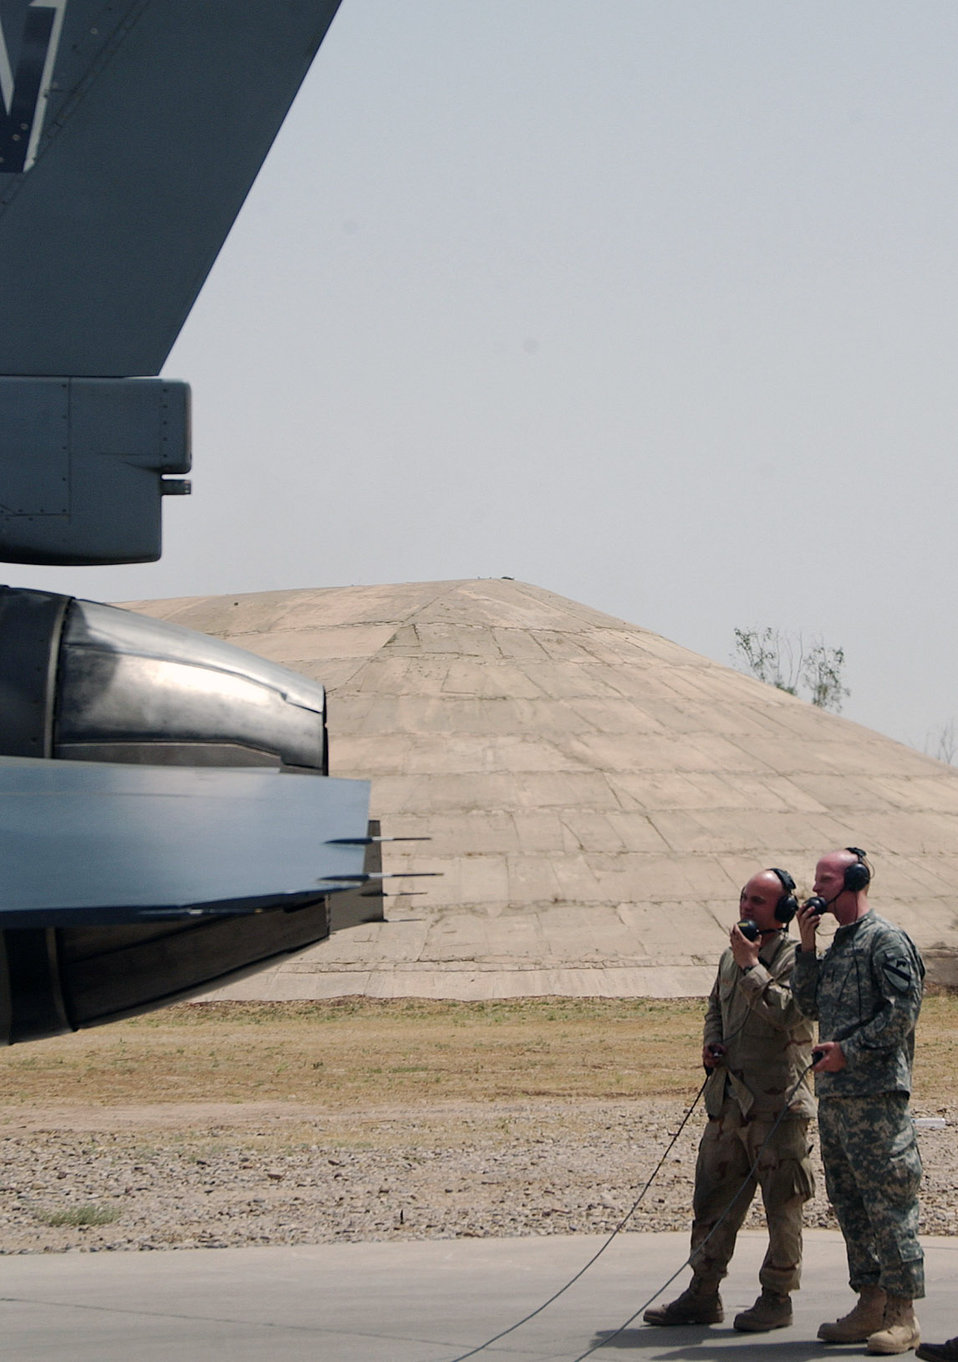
Balad Airman gets chance visit with Army brother

Staff Sgt. Samuel Martin (right) shows his brother, Army Sgt. Paul Martin, how he performs a maintenance check on an F-16 Fighting Falcon jet engine run inspection May 30 at Balad Air Base, Iraq. Sergeant Samuel Martin is assigned to the 14th Air Expeditionary Maintenance Unit and Sergeant Paul Martin is a satellite imagery analyst with the 3rd Brigade, 1st Calvary Division from Fort Hood, Texas. The Airman got a chance to meet his brother who was passing through with his Army unit on the way to Camp Victory, Iraq.